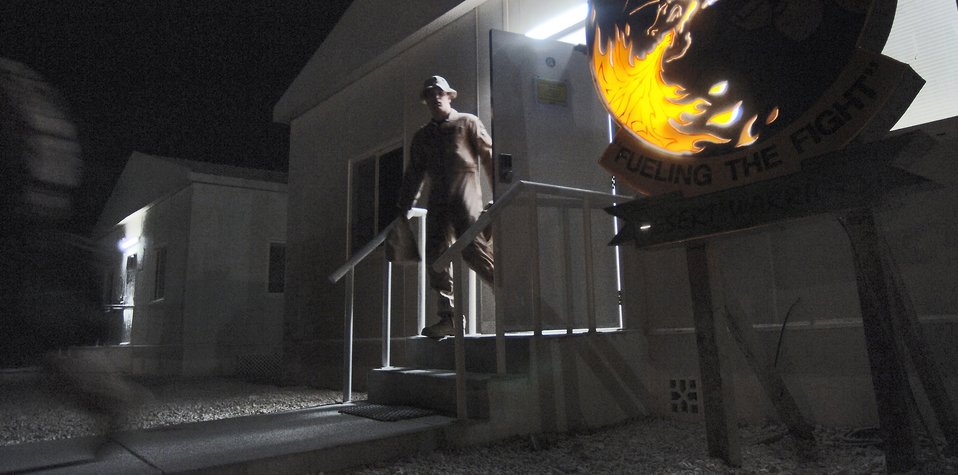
Tanker pride

SOUTHWEST ASIA (AFPN) -- Capt. Ryan Weaver leaves the 340th Expeditionary Air Refueling Squadron operations building on his way to a KC-135 Stratotanker after receiving a mission and intelligence briefing.